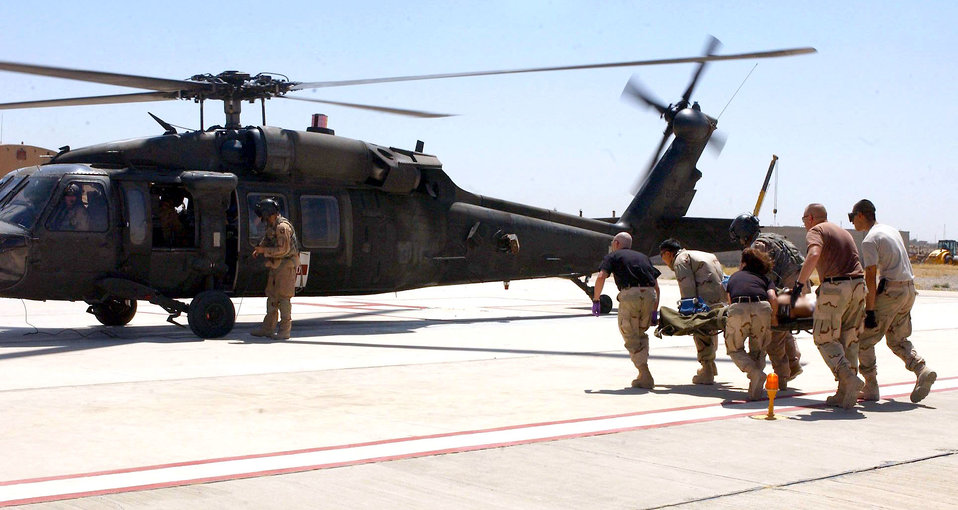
Medical evacuation

Airmen with the 506th Expeditionary Medical Group at Kirkuk Air Base, Iraq, load an injured patient on an Army UH-60 Black Hawk for medical evacuation on Wednesday, June 21.